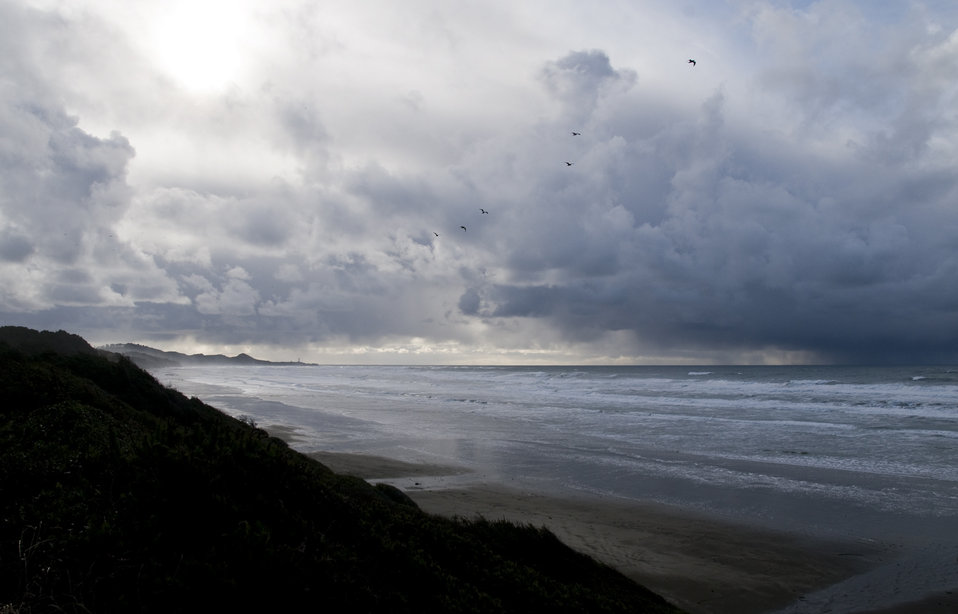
Storm approach, Oregon coastal refuges

Darkening clouds signal a storm's approach to the wildlife refuges along the Oregon coast.